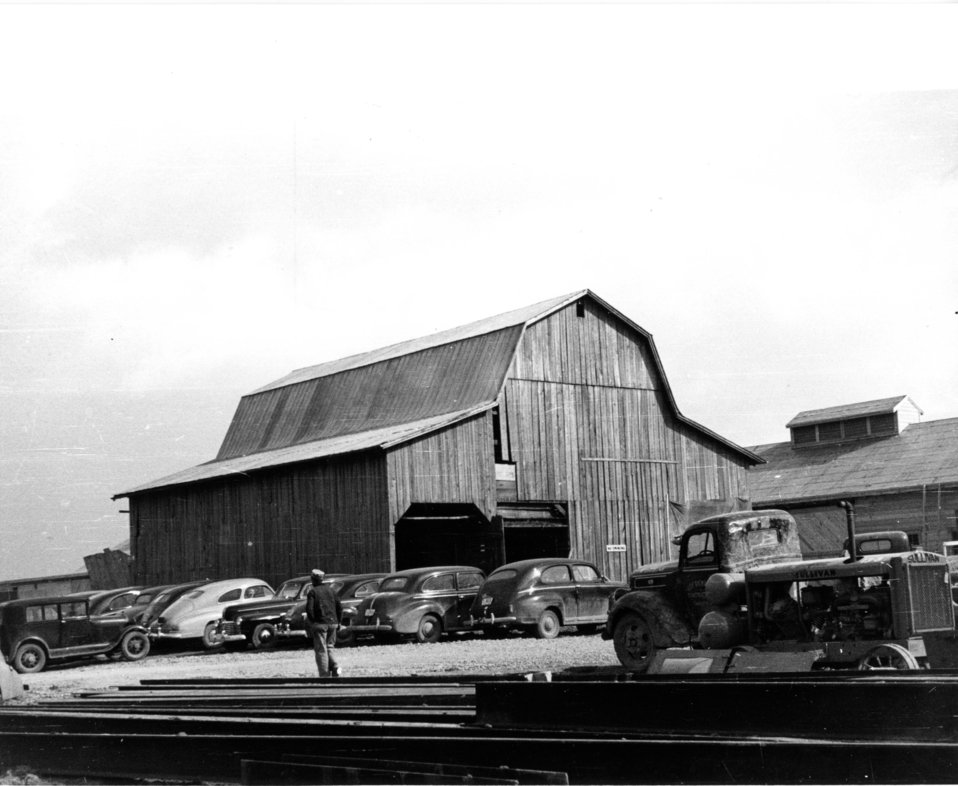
K-25 at Oak Ridge